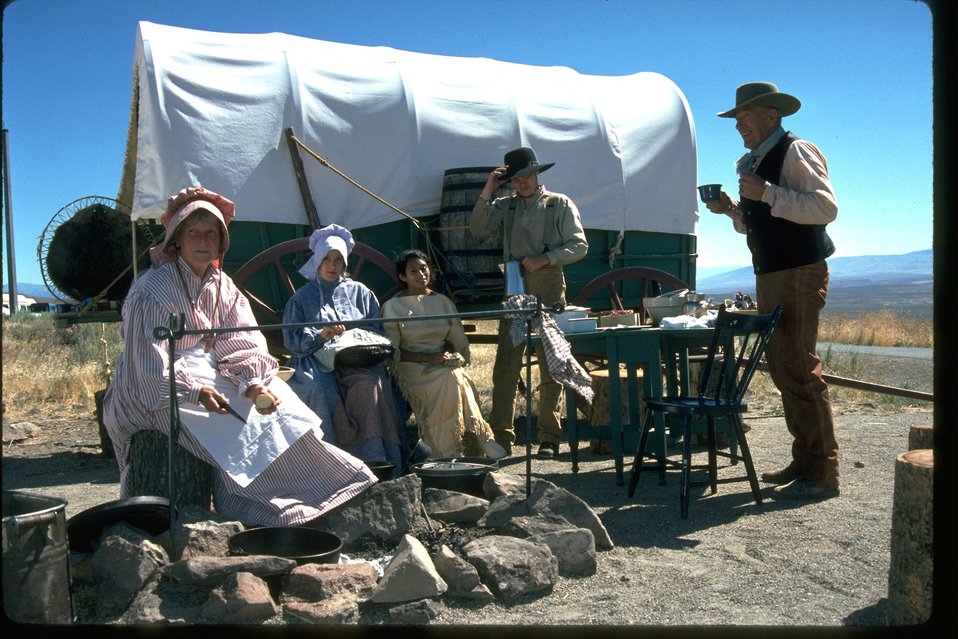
Pioneer re-enactors at encampment.